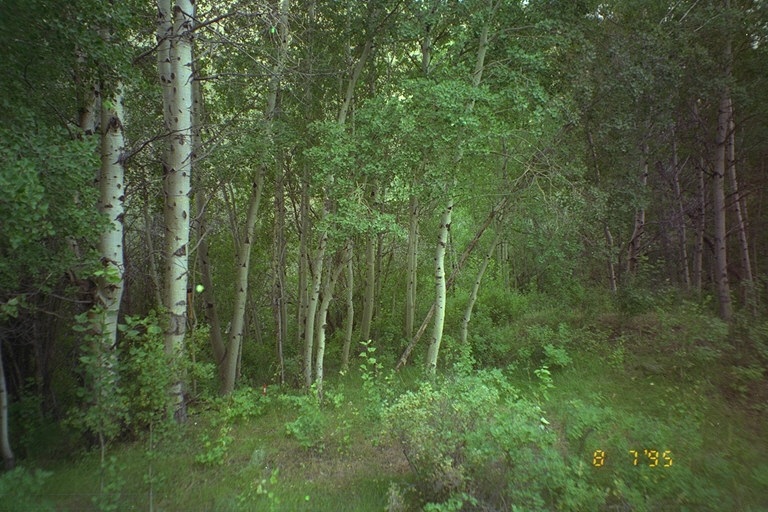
Riparian area Public Lands Salmon Field Office UCSC Upper Columbia Salmon Clearwater District